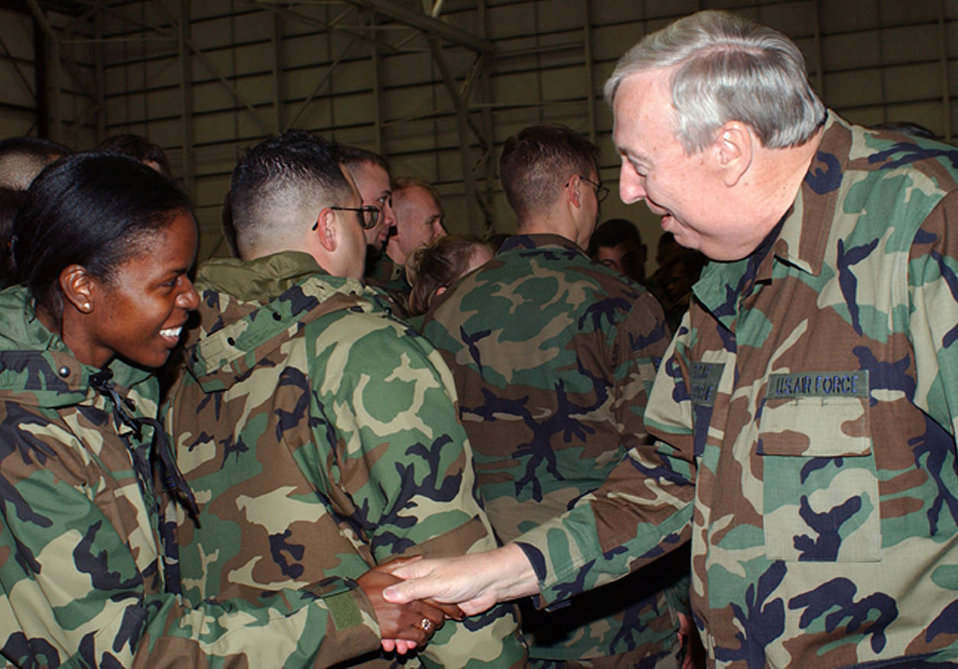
Roche visits RAF Mildenhall troops

ROYAL AIR FORCE MILDENHALL, England -- Secretary of the Air Force Dr. James Roche shakes hands with Capt. Suzette Knight after he spoke during a troop call here Dec. 11. Knight is assigned to the 100th Air Refueling Wing legal office here.